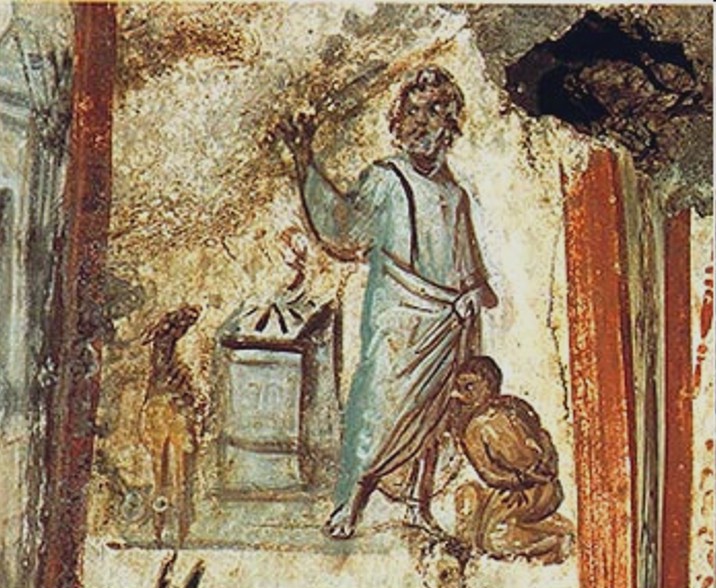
Father Abraham slaying his son Isaac